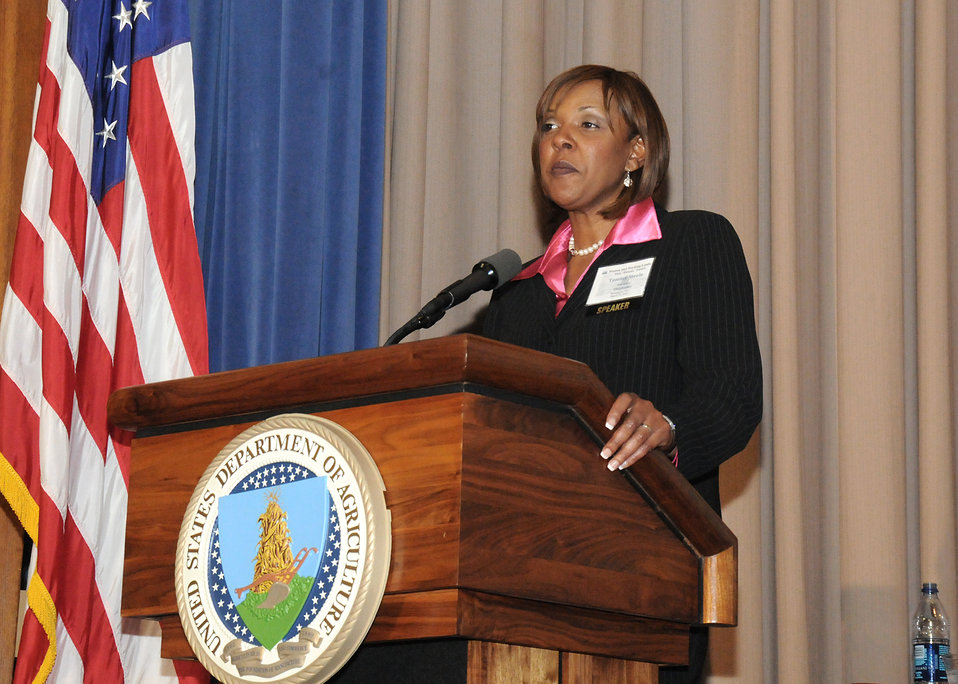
Tammy Steele and her family farm hay, wheat, specialty crops and raise horses, cattle, and pigs on their farm in Oklahoma. Ms. Steele was one of four women sitting on the panel at the Women and Working Lands: Past, Present, Future conference held in the Jefferson Auditorium at the Department of Agriculture in Washington, D. C., on Thursday, Mar. 25, 2010. USDA photo 10di1283-149